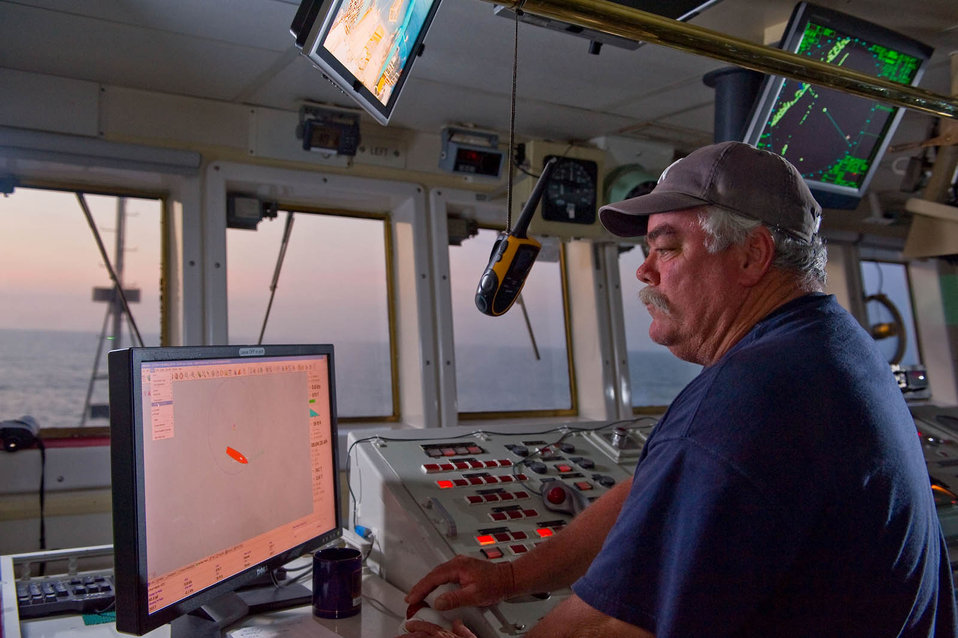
Navigating the ship

Doug Moore, third mate on the OSV Bold, navigates to sampling site and coordinates sample collection from the bridge.